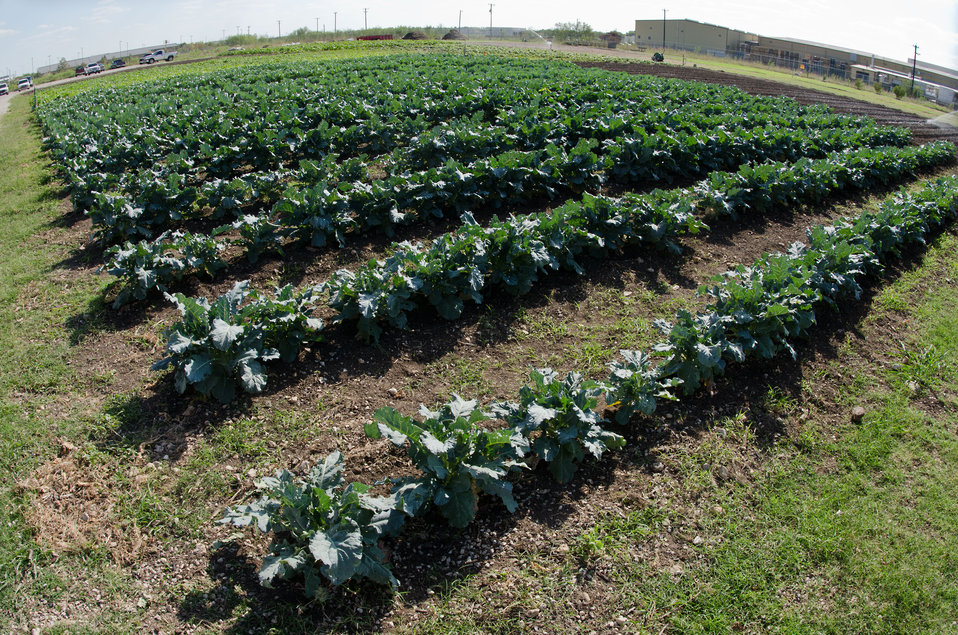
The Spurs Community Garden is part of the San Antonio Food Bank’s Nutrition Education Program and provides garden fresh organic produce to one of it’s sponsors, the United States Department of Agriculture (USDA) Supplemental Nutrition Assistance Program - Education Program (SNAP-ED). This produce is used for presentations about nutrition education, economical ways to increase fruit and vegetable consumption and physical exercise on it’s walking trail to get fit in San Antonio, TX, on Monday, October 31, 2011. The 5.5-acre garden has a teaching/demonstration garden, large –production gardens, and bee hives. In its first year of operation the garden produced 2,640 pounds of produce and attracted 602 volunteers to support it’s operation and improvement. Most of the produce goes to the more than 500 human service agencies and used in its Community Kitchen to support various meal programs, some of which are supported by the USDA. (For more information go to safoodbank.org/index.php/programs/nutrition/community-garden).
“We couldn’t do what we do without our partnership with USDA’” said President and CEO Eric Cooper. He continues, “We are privileged in partnering (with the USDA) to feed kids, through the summer, with the Summer Food Service Program, and throughout the year, with the Child and Adult Care Feeding Program (CACFP). Then in our approach to feeding seniors, we partner with USDA in the CSFP, and the Senior Farmer’s Market (Nutrition) Program. Through the support of the SNAP-Education Program we are able to educate them during their time of need. With this comprehensive approach we are really able to get the right food, the right amount, at the right time, to needy families throughout our community – which allows us to feed the fifty-eight thousand we do, each week.”
SAFB serves 16 counties in Southwest Texas and states, “Nearly one out of every four children and one out of every five adults in Southwest Texas lives in poverty and has difficulty meeting basic nutritional needs.” According to SAFB, sixty-five percent of the people requesting emergency food have children. “Additionally, the senior citizens and those living on a fixed income generally have limited funds for a consistent grocery budget.” USDA photo by Lance Cheung.

www.fns.usda.gov/fns/
www.fns.usda.gov/snap/
www.fns.usda.gov/snap/nutrition education/default.htm